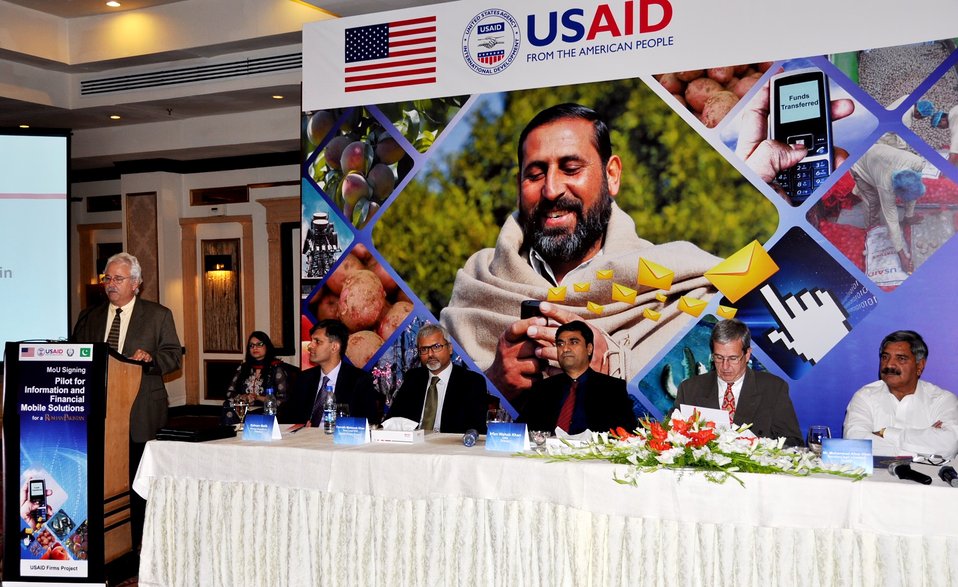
Information and Financial Mobile Solutions- MOU signing ceremony

U.S.-KP-Telenor Partnership Brings New Mobile Technology to Swat Farmers